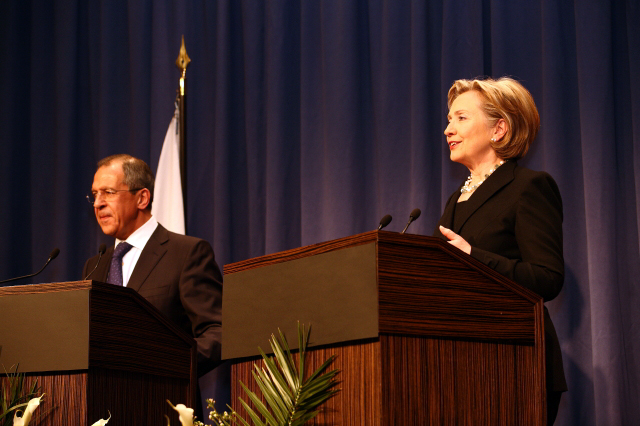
Press Conference With Russian Foreign Minister

Press conference after dinner meeting between U.S. Secretary of State Hillary Rodham Clinton and Russian Foreign Minister Sergey Lavrov in Geneva, Switzerland March 6, 2009.